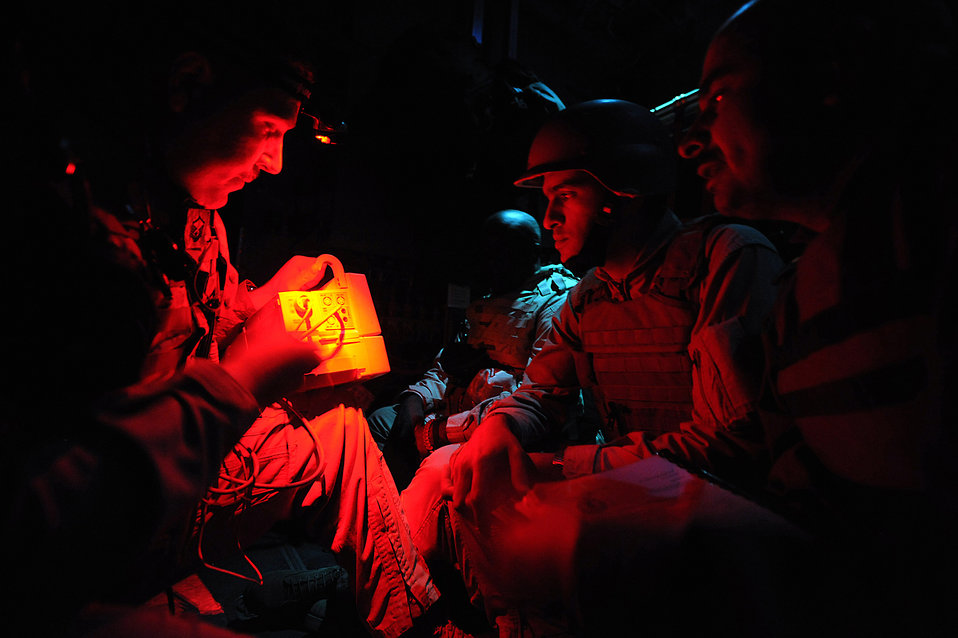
Iraqi doctors study American aeromedical evacuation program

Master Sgt. Scott Wilkes demonstrates a Propaq system to Iraqi air force Capt. (Dr.) Mohammed and Iraqi air force Maj. (Dr.) Abdul-Razaq during an aeromedical evacuation mission over Iraq Nov. 7. The device measures a patient's blood pressure, oxygen levels, heart rate, ECG and body temperature. The two Iraqi doctors from Iraq's Ministry of Defense accompanied the Air Force mission to study aeromedical evacuation procedures so that they can establish an aeromedical evacuation service for the Iraqi air force. Sergeant Wilkes, a medical technician assigned to the 332nd Expeditionary Aeromedical Evacuation Flight, is deployed from McGuire Air Force Base, N.J.